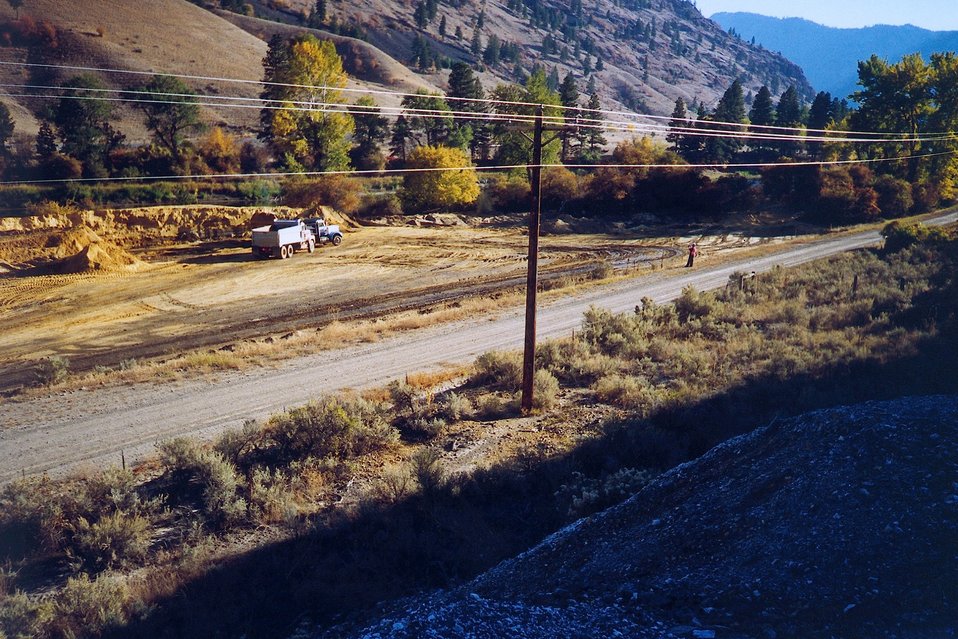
AML. Kaaba-Texas Mine Repository Area, Tailings.